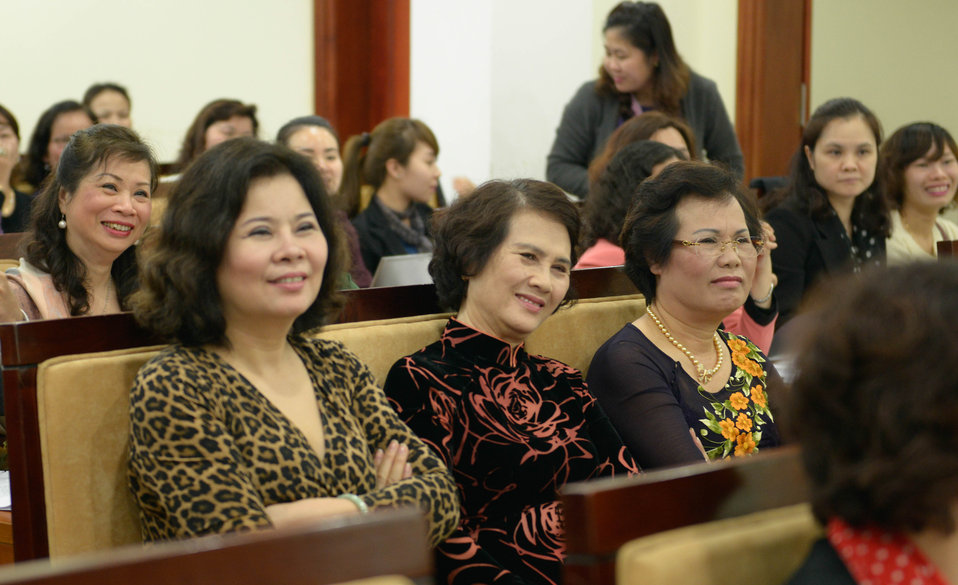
International Women's Day Seminar for female entrepreneurs

Phu Tho, Vietnam. March 1, 2014.